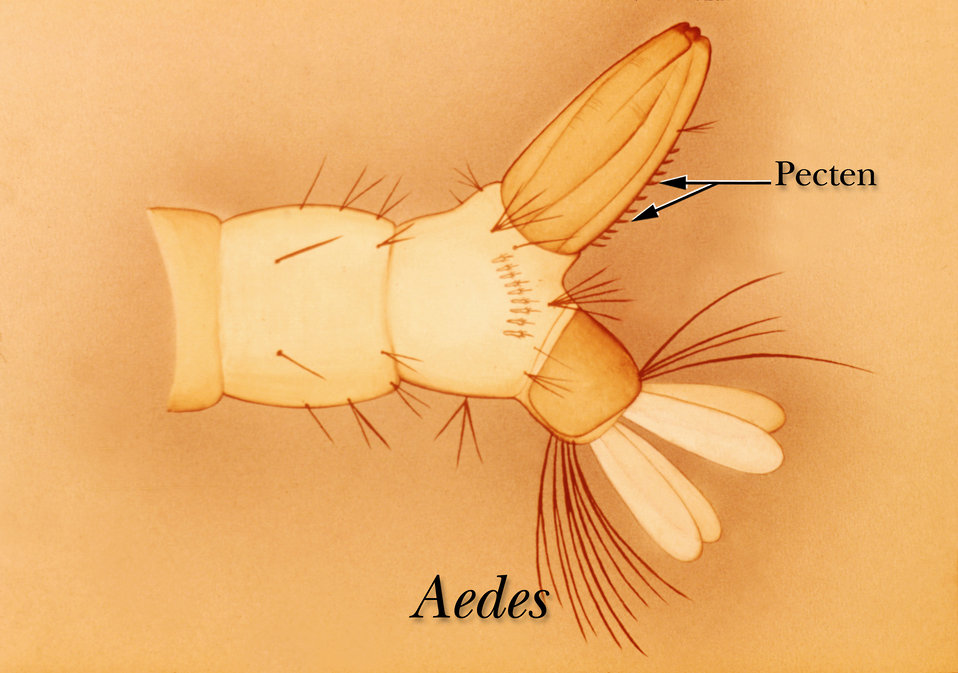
An illustration identifying the pecten on the terminal abdominal segment of an Aedes mosquito larva.